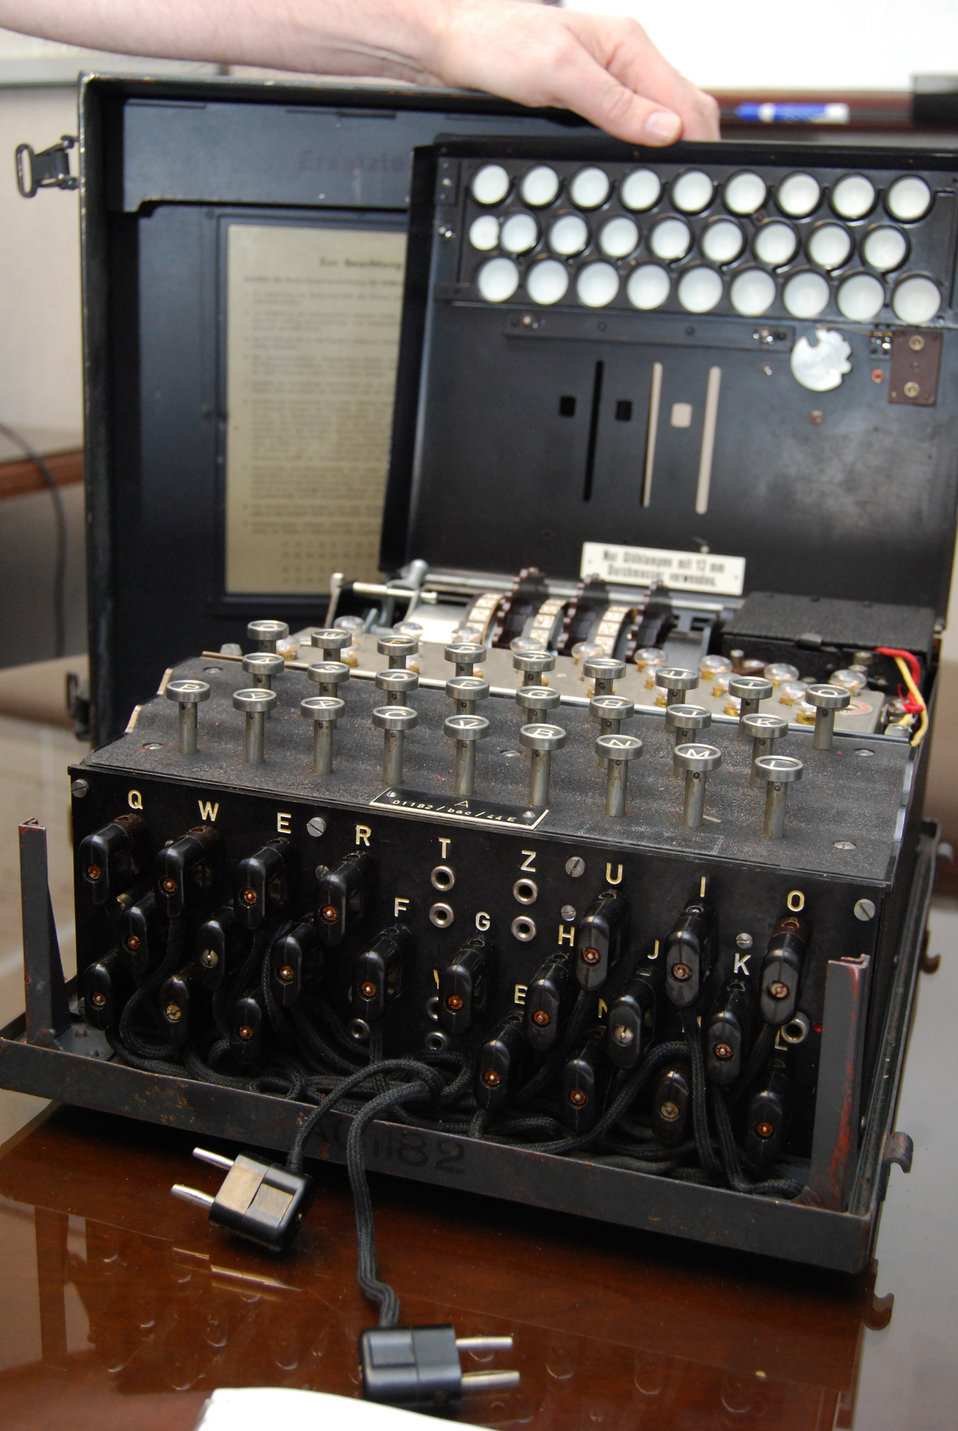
Iraqi air force EOD training

The Enigma machine pictured here is on permanent loan to the Air Force Academy Department of Computer Science from the National Cryptologic Museum at Fort George G. Meade, Md. The Computer Science department staff will use the machine in its Introduction to Computing class and its Cryptology class. This Enigma machine, Serial No. 01182, was used by the German Luftwaffe during World War II.